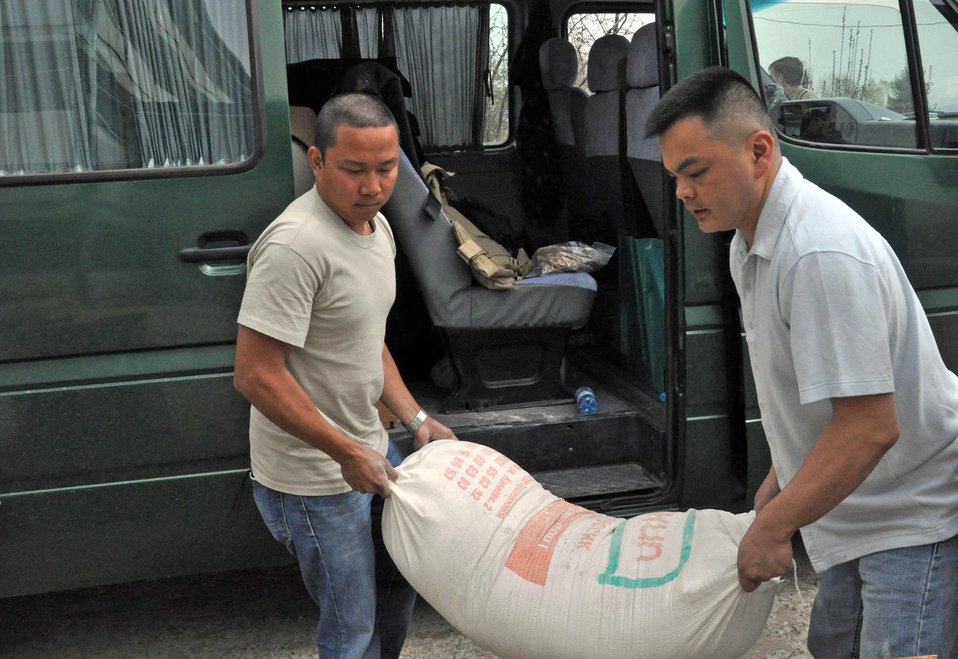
Airmen provide humanitarian assistance in Kyrgyz village

Staff Sgt. Jeff Legaspi and Capt. Tom Mulka carry a 100-pound bag of flour for the residents of the TokMok Psychoneurologic Boarding House April 14, 2010, in Iskra Village, Kyrgyzstan. Sergeant Legaspi is a 376th Expeditionary Civil Engineer Squadron electrical engineer, and Captain Mulka is the Manas Area Benefit Outreach Society president. Airmen brought food, clothing and entertainment items to patients as part of the Transit Center at Manas humanitarian outreach efforts.